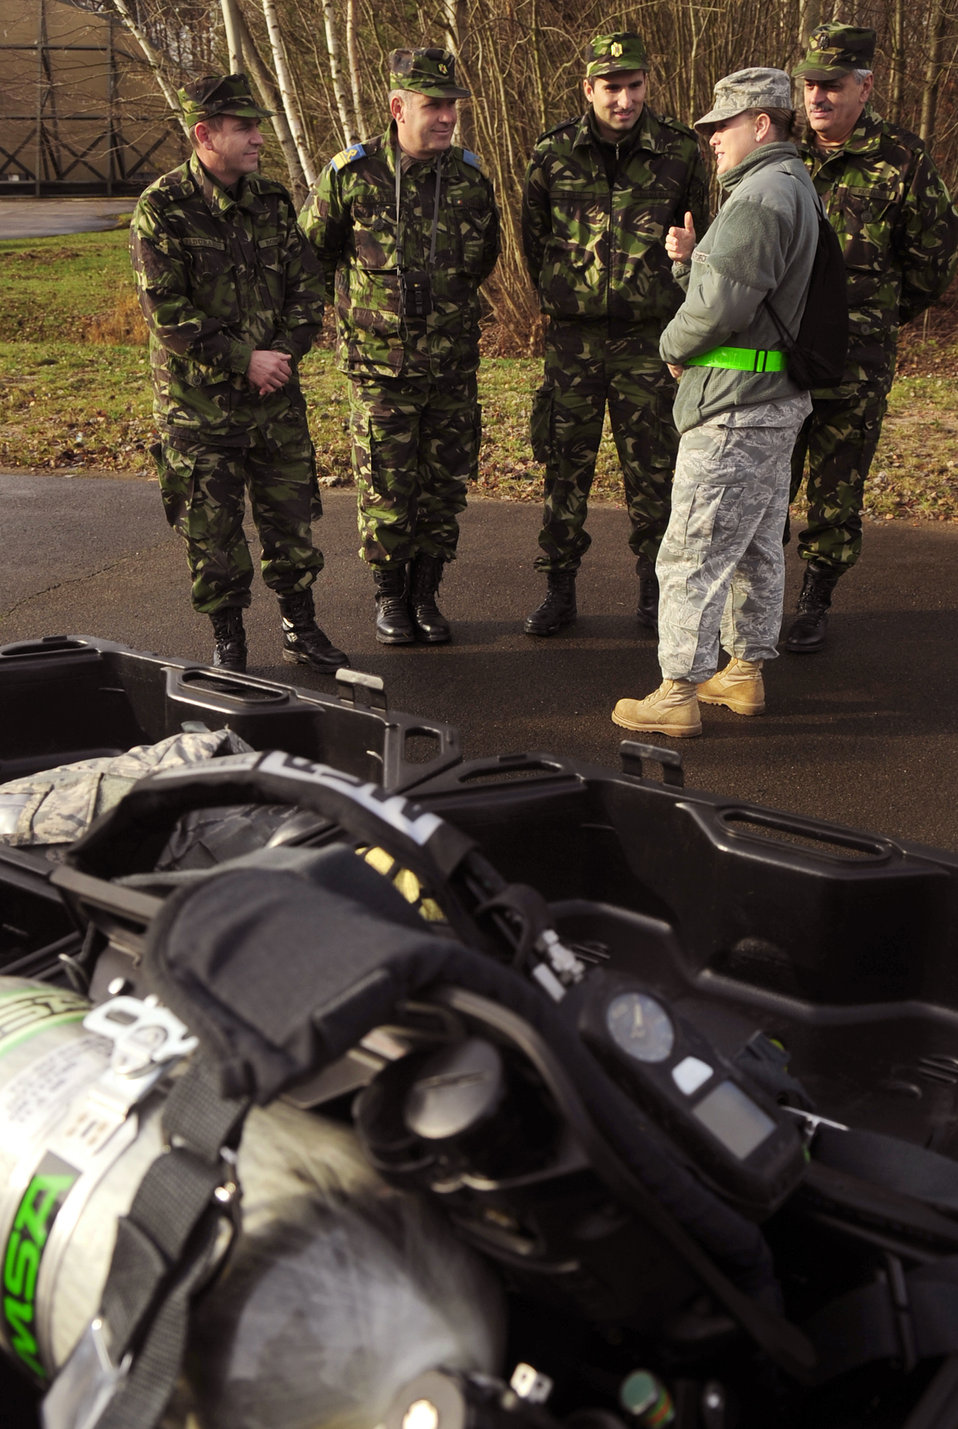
Airmen from across the world participate in Silver Flag

Staff Sgt. Rebecca Tongen briefs members of the Romanian air force on the particulars of the chemical, biological, radiological, nuclear and high yield explosive training station, Nov. 20, 2010, during the practical exercise of Silver Flag at Ramstein Air Base, Germany. Silver flag is a weeklong, ongoing training program that combines classroom and practical application exercises to prepare Airmen for deployment scenarios. Members of the Romanian air force were invited to observe training and share information. Sergeant Tongen is a Silver Flag cadre member.